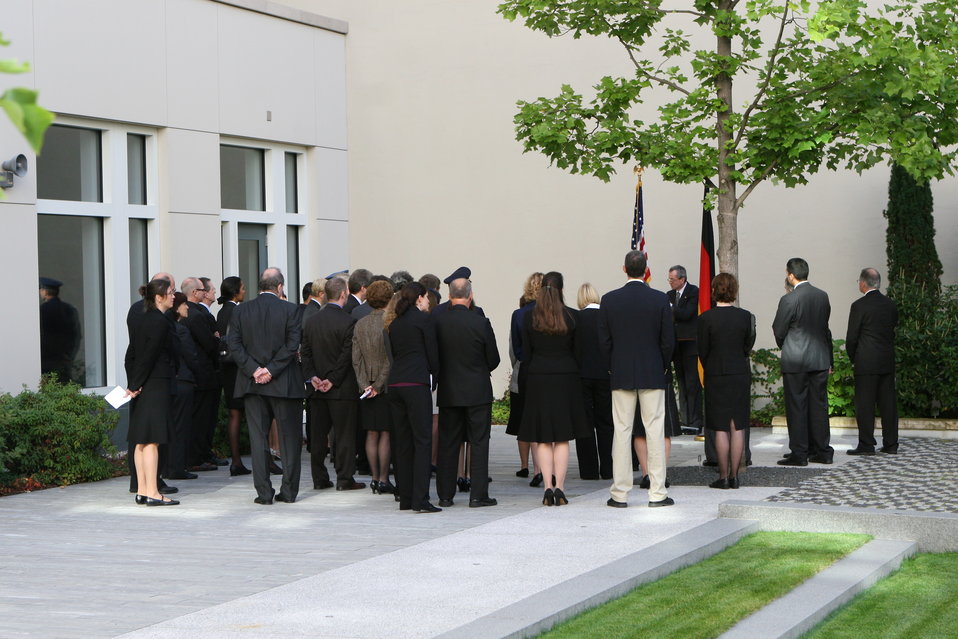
German Government Officials and U.S. Embassy Staff Attend 9/11 Remembrance Ceremony

German government officials and U.S. Embassy staff, along with representatives of the families of some of the German victims, attend a 9/11 remembrance ceremony at the United States Embassy in Berlin, Germany, on September, 11, 2009.